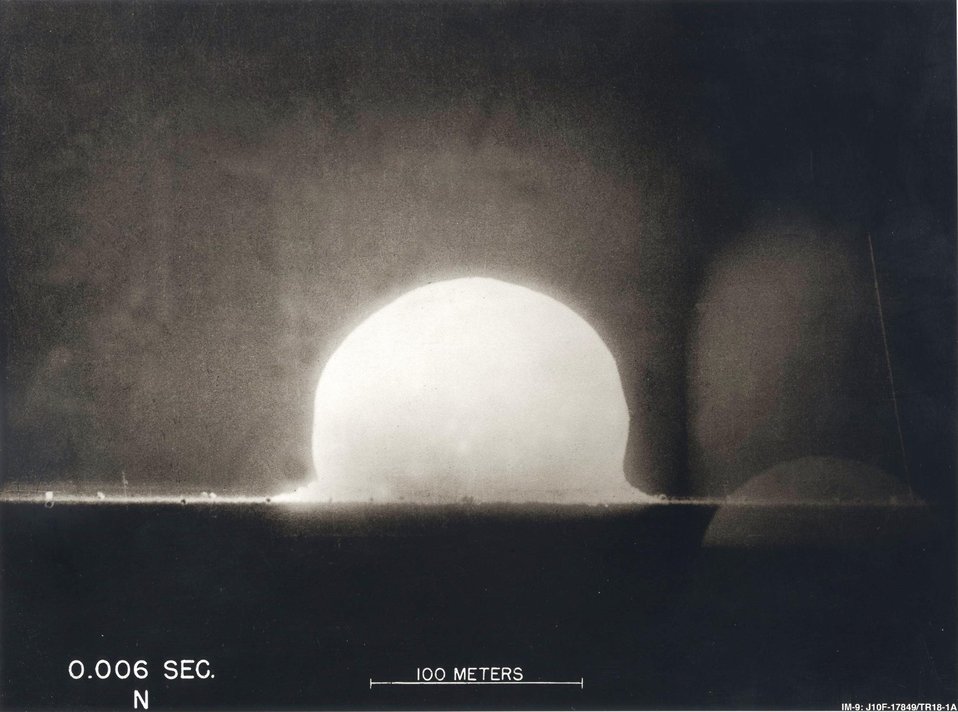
TRINITY AT 00.006